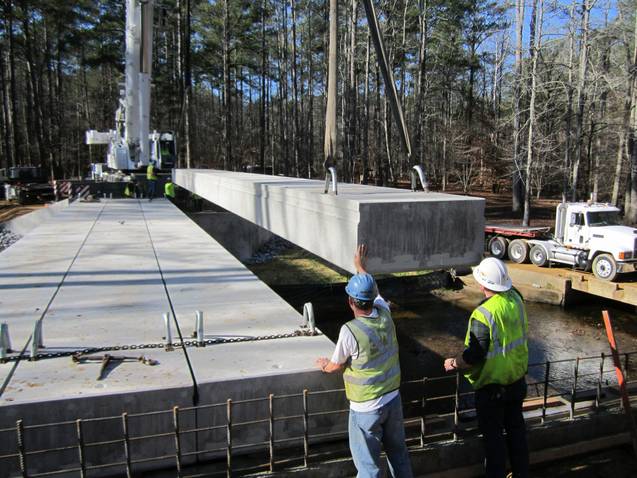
pine glen two

Contractor’s crew guides beam into place on the new Pine Glen Bridge on the Talladega National Forest near Helflin, AL in 2011. The project employs local community workers who built the bridge, which will help to improve habitat for fish and other aquatic organisms, reduce sediment deposits in the local streams and rivers, and improve access for visitors.